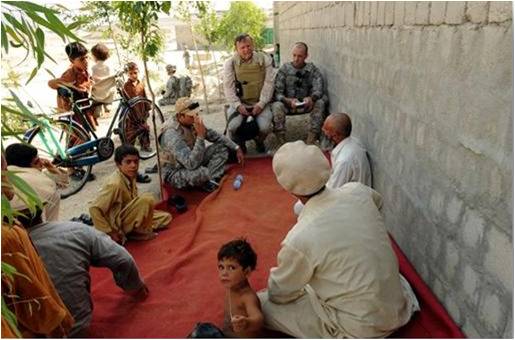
'Good Neighbor' Program